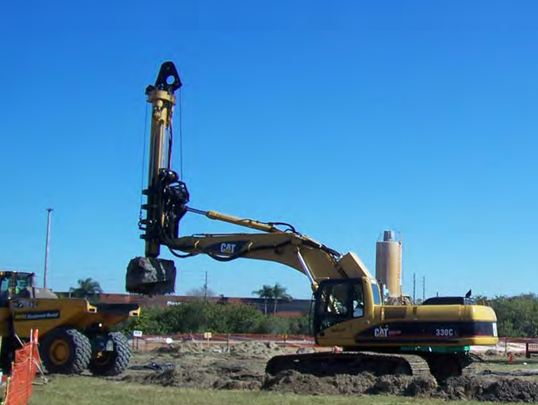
Southwest Plume Cleanup to Start By Summer 2013

Deep soil mixing at the Paducah Site will involve a large-diameter auger like this one.